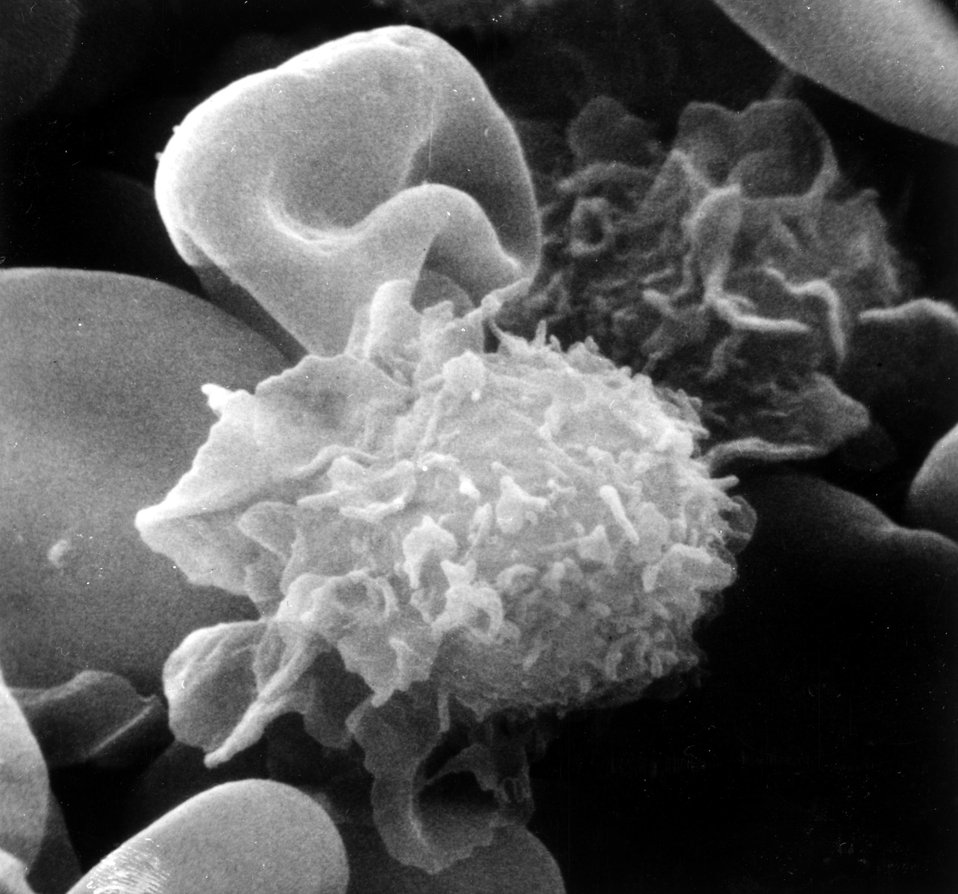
'Hairy' cell type with surface features on monocytes (ruffled membranes at one pole) and lymphocytes.